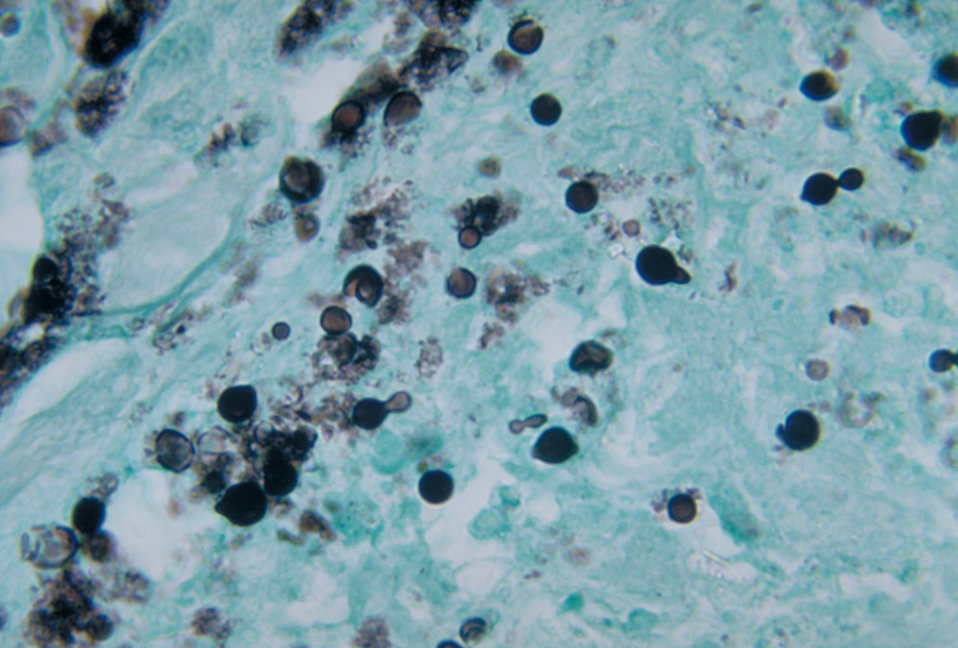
Note the histopathologic changes in a case of primate lobomycosis caused by Lacazia loboi, formerly Loboa loboi.